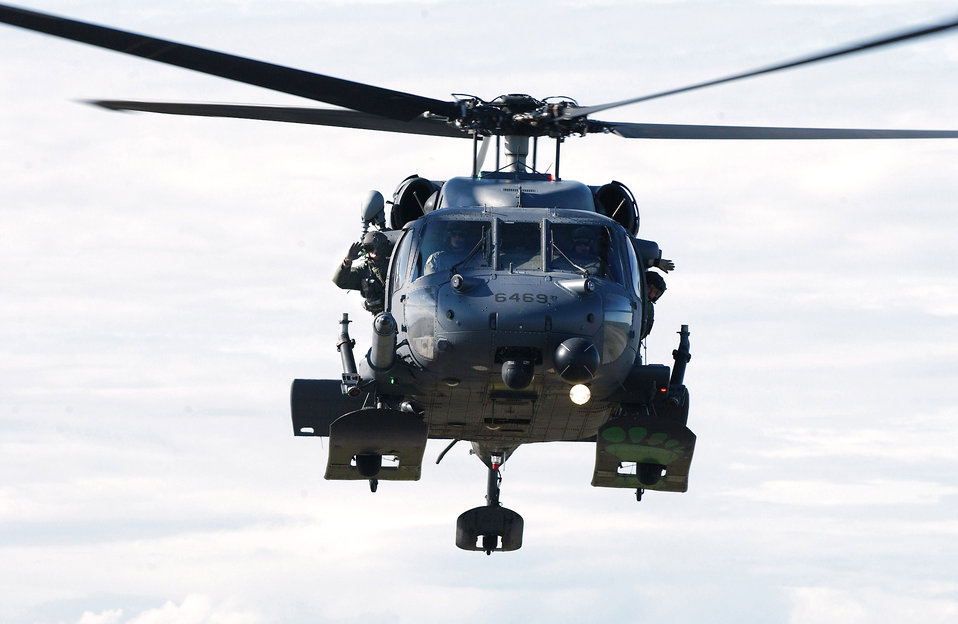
Eielson Airmen turn child into pilot for a day

An HH-60 Pave Hawk aircrew wave to Alex Lee Aug. 22 at Eielson Air Force Base, Alaska. Alex was born with congenital heart defects and Down syndrome and was selected by the Make-A-Wish Foundation for the Pilot for a Day program. The purpose of the program is to ease the pain of children who lost a normal childhood due to illnesses or disabilities.